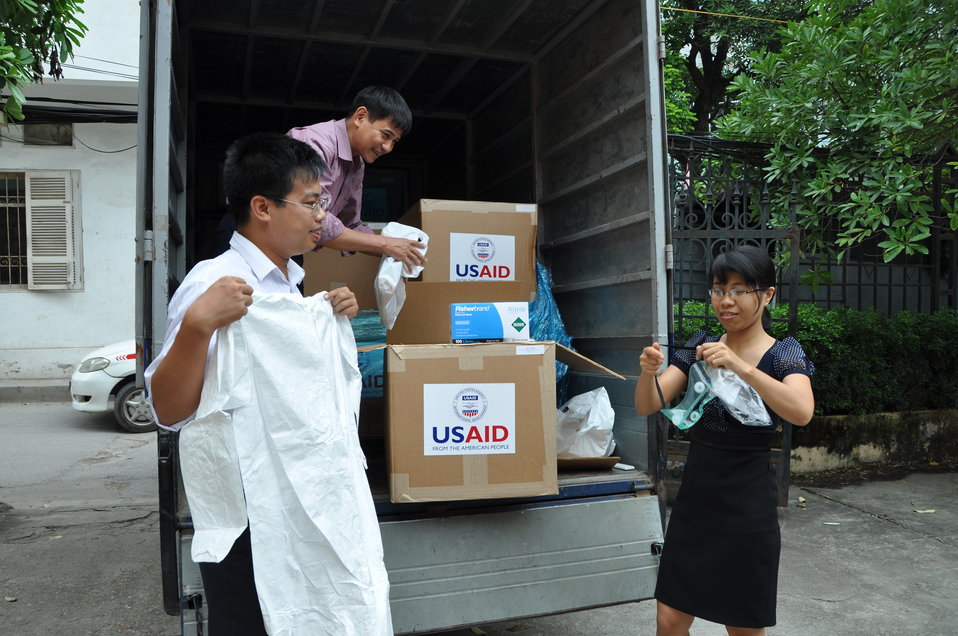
Vietnamese officials inspect new personal protective equipment in Hanoi in September 2011.

Nguyen Dug Hanh of Vietnam's Department of Animal Health (on truck),transport supervisor Doan Phu Huyen (left) and Nguyen thi Thanh Diep inspect a shipment of 1,700 personal protection kits -- suits, masks, gloves, goggles and related items -- in September 2011 before they are shipped to Can Tho, Ha Nam, Hung Yen, Kieng Giang, and Quang Tri provinces to help veterinary officials and animal health works battle disease outbreaks in the country.